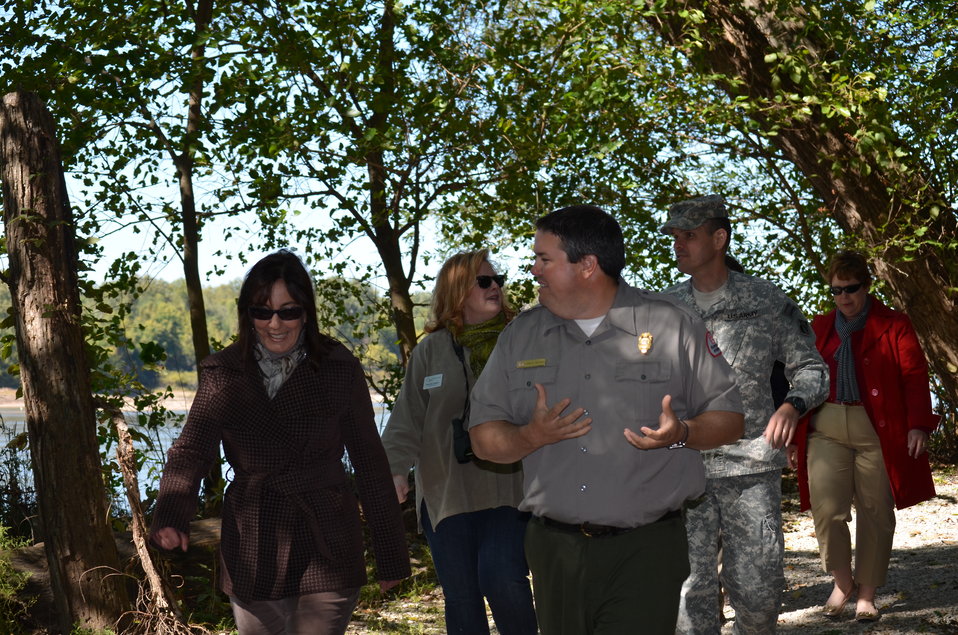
Leading the tour

Heading to the confluence overlook point. USFWS/Ashley Spratt